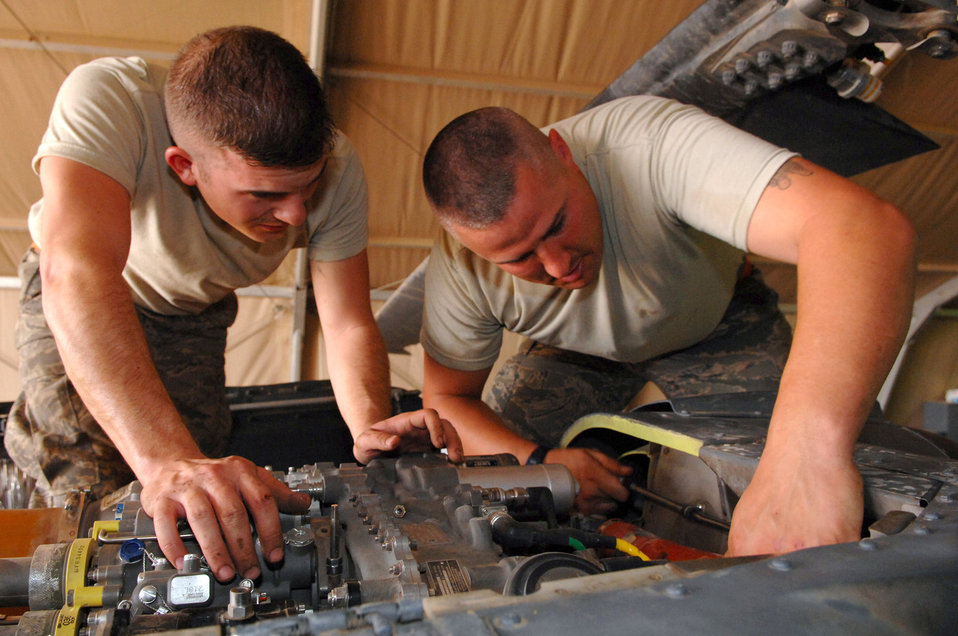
Helo maintenance

Airman 1st Class Donald Baker (left) and Staff Sgt. Tait Delzer install the left engine air intake on an HH-60 Pave Hawk helicopter March 12 at Balad Air Base, Iraq. Airman Baker and Sergeant Delzer, crew chiefs with the 64th Expeditionary Helicopter Maintenance Unit, performed an inspection on the aircraft after it had been flown 300 hours. As part of the preventative maintenance inspection, they searched carefully for cracks and corrosion. Both Airman Baker and Sergeant Delzer are deployed from Moody Air Force Base, Ga.